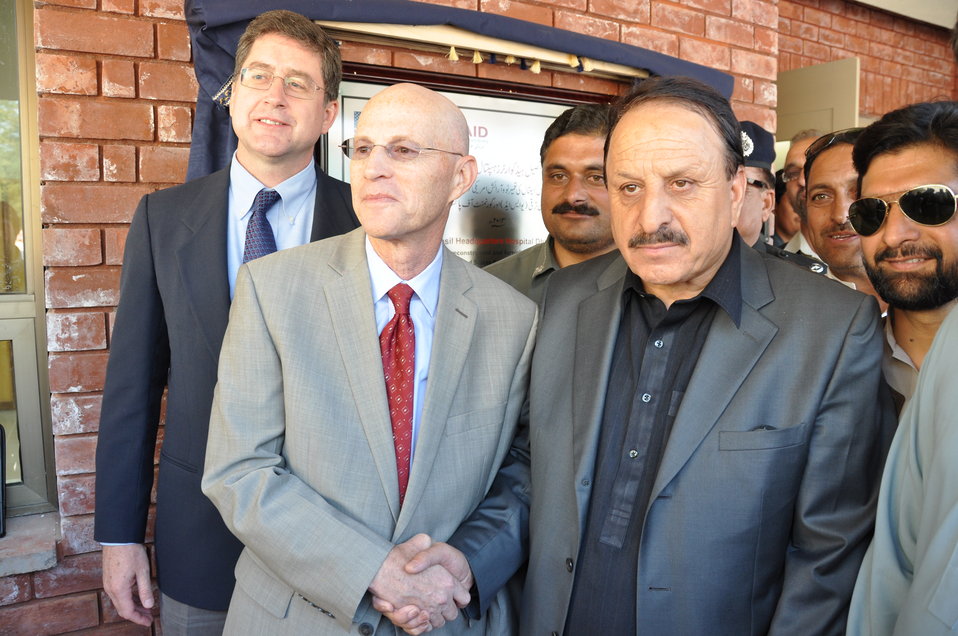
Dhirkot Reconstructed Hospital Inauguration Pakistan Reconstruction Program 01